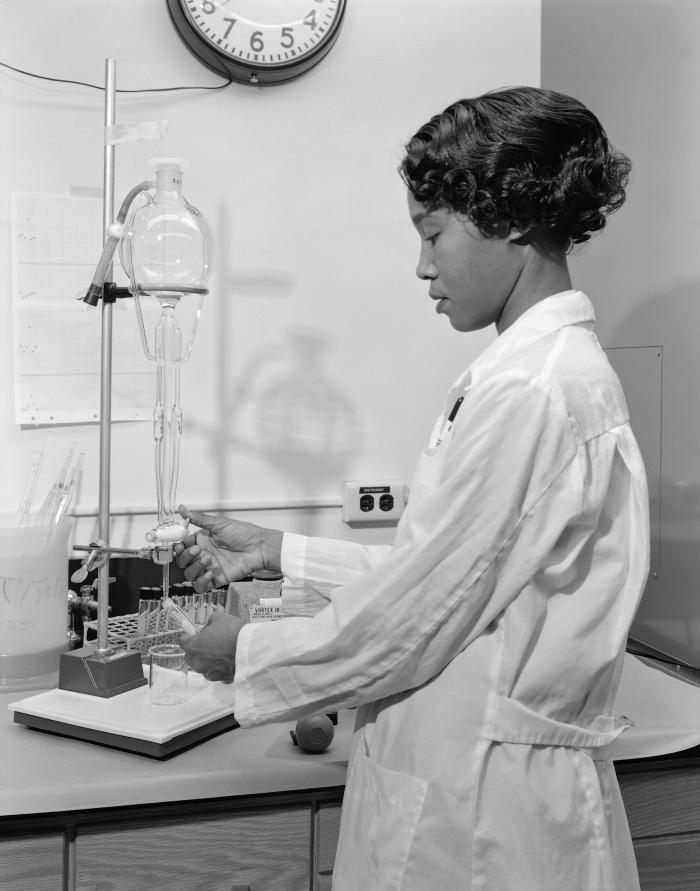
This historic image created in 1964, depicted laboratory technician, Dorothy Roland at work in one of the Centers for Disease Control's laboratories, carrying out standard laboratory practices. In this particular image she was adding a precise amount of liquid to a test tube, by manipulating a stopcock at the end of what appeared to be a modified separation flask.